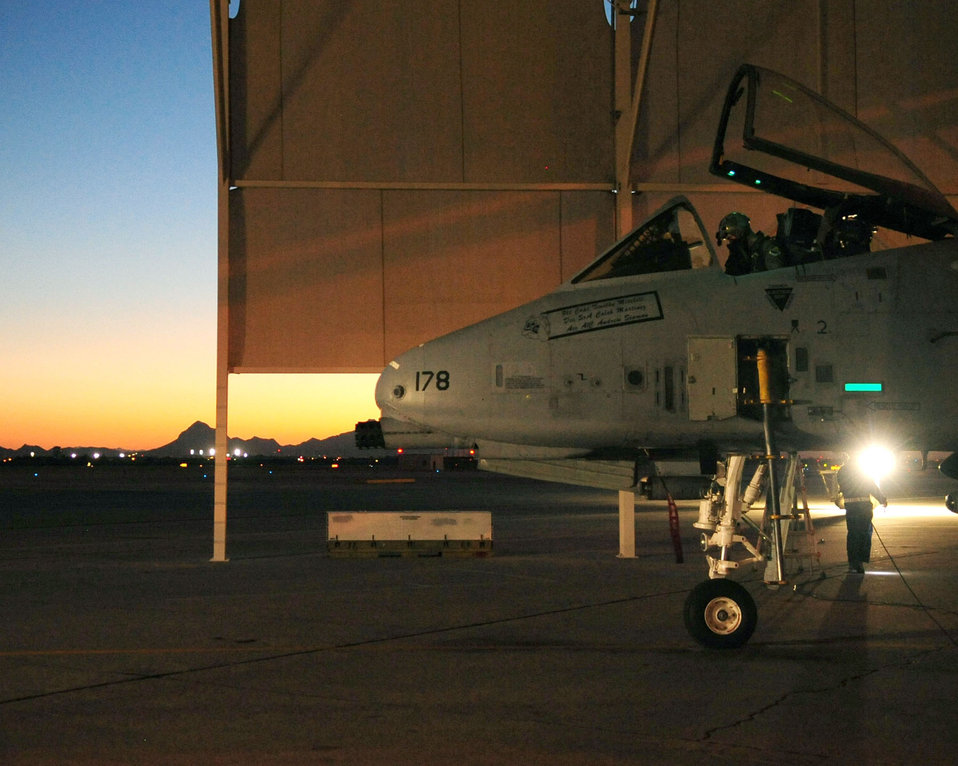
A-10 qualification

1st Lt. Dan Griffin, a pilot from the 358th Fighter Squadron at Davis-Monthan Air Force Base, Ariz., performs his final operations checks on his A-10C Thunderbolt II prior to departing for a night flying mission June 23, 2010. Lieutenant Griffin is a student in the A-10C Pilot Initial Qualification course and upon completion of this course he will be a fully qualified A-10C pilot.